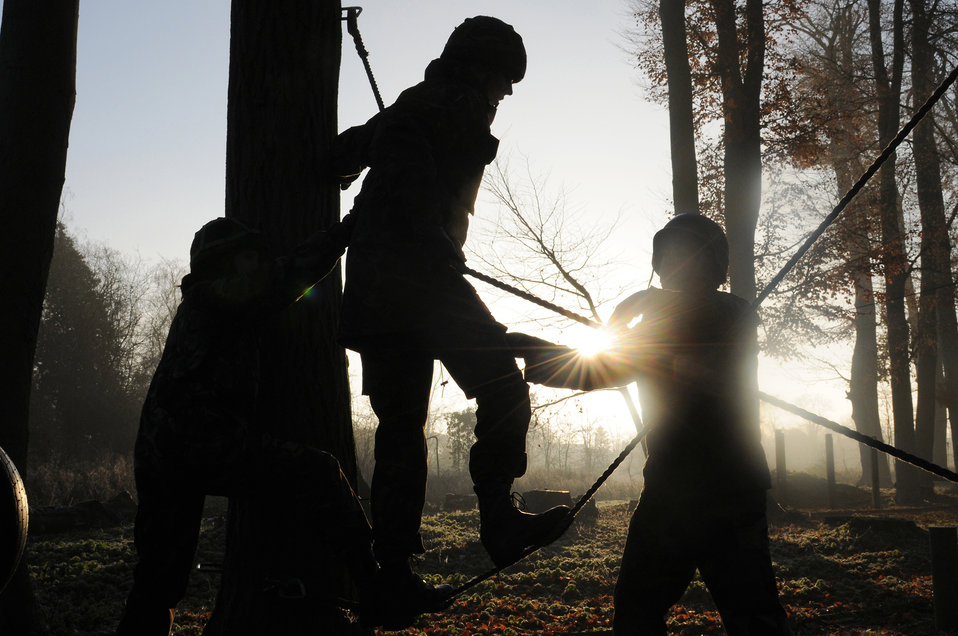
Cross-country training pools experience, skills

Airmen from Royal Air Force Mildenhall, England, and RAF Marham, England, help a teammate cross a set of ropes at the low-ropes course during Leader, Ethos and Air Power Training Day Dec. 6, 2010, at Royal Air Force Marham, England. This activity required leadership and mental and physical strength of participants to get all team members to the finishing point.